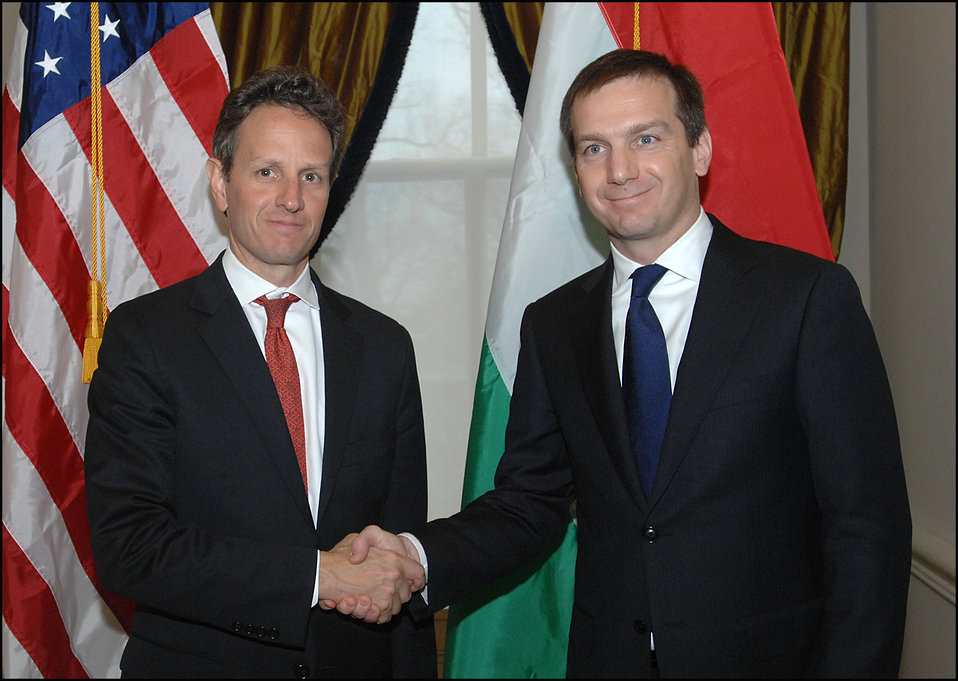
Hungarian Prime Minister Gordon Bajnai

On December 4, 2009, Secretary Geithner met with Hungarian Prime Minister Gordon Bajnai.